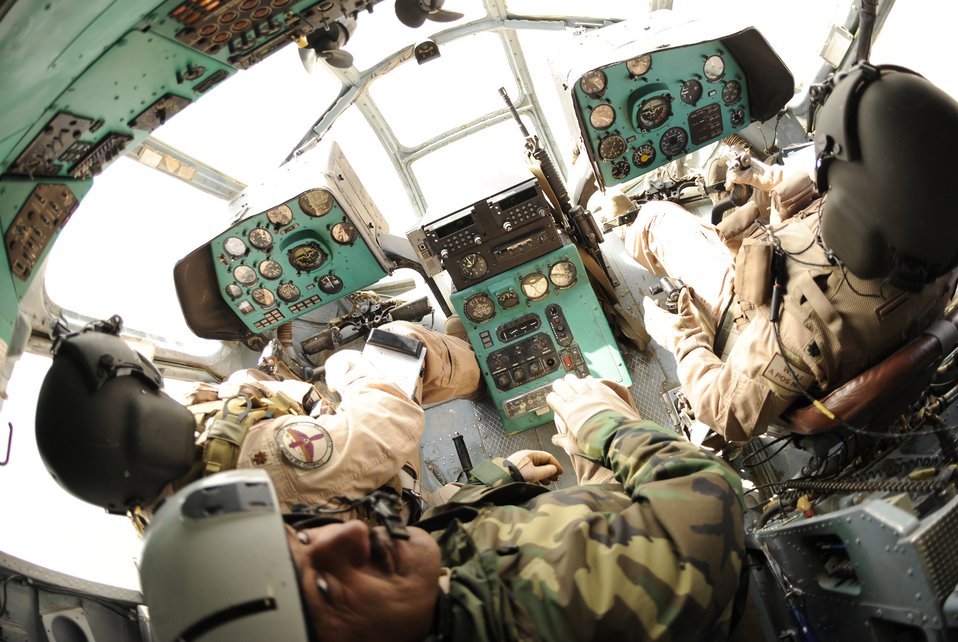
Airmen and Afghan soldiers pilot an Mi-17 helicopter

A joint U.S. Air Force and Afghan National Army crew from the 438th Air Expeditionary Advisory Group/Combined Air Power Transition Force pilots an Mi-17 helicopter during a medical evacuation mission Feb. 3, 2010, at Bagram Airfield, Afghanistan.